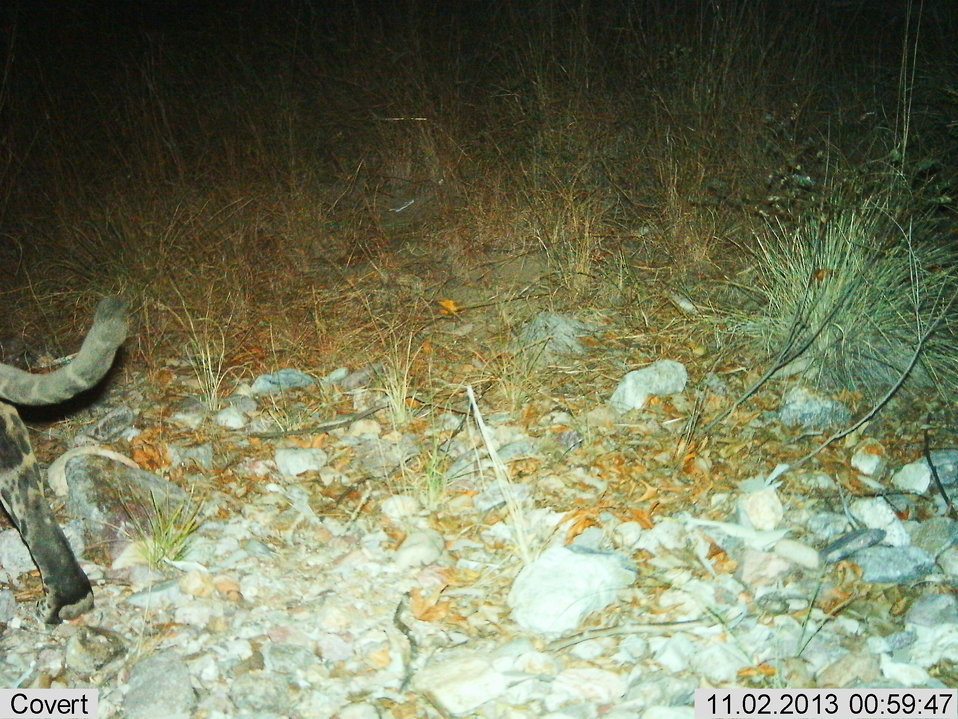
Male jaguar photographed by automatic wildlife cameras in the Santa Rita Mountains on November 2, 2013, as part of a U.S. Fish and Wildlife Service/Department of Homeland Security-funded jaguar survey conducted by University of Arizona. This is the first of three photos from November 2 at this location. This photo location is new but not far from previous photo detections.